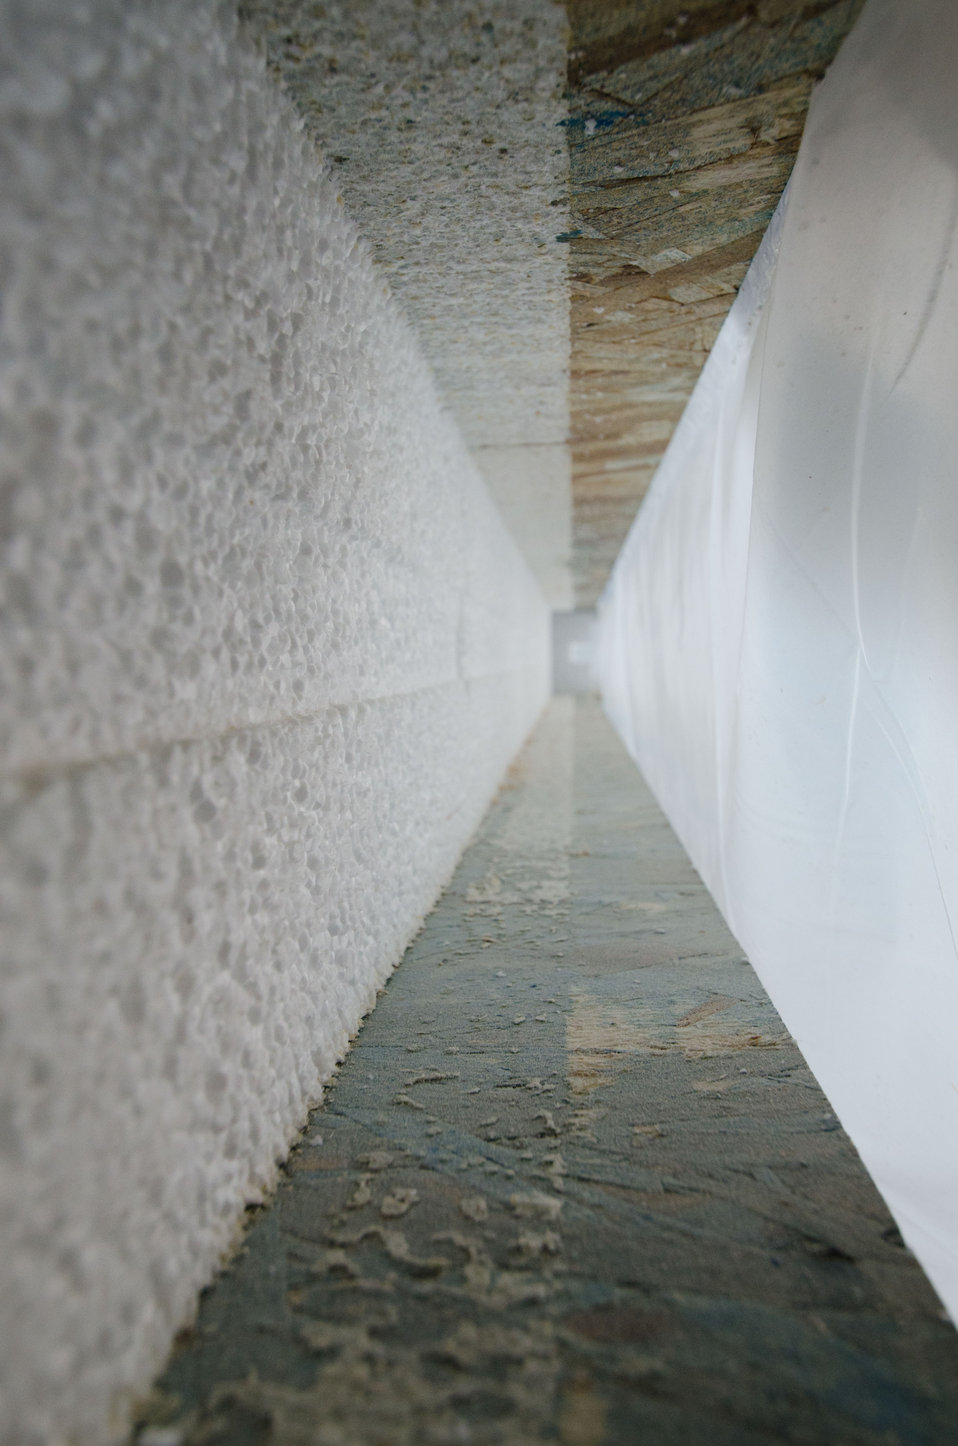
Close-up view inside an extra thick foam filled exterior wall that adds to the climate sealing and energy efficiency of a new type of manufactured home from Stardust Industries on Wednesday, July 13, 2011 in Monticello, KY. They are helping retool and redirect Kentucky’s houseboat manufacturing industry – which has been decimated because of the struggling economy – by using its facilities and manpower to create low-cost housing that is energy efficient. Rural Development obligated $499,000 in Rural Business Enterprise Grant funds to support this unique endeavor. Up until a few years ago, there were several successful houseboat manufacturers in the four-county area surrounding the city of Somerset. Most have now ceased operation or drastically reduced output, which has led to dramatic, long-term job loss. These new energy efficient homes will be constructed in redesigned, refitted houseboat factories using local workers that have been retrained.